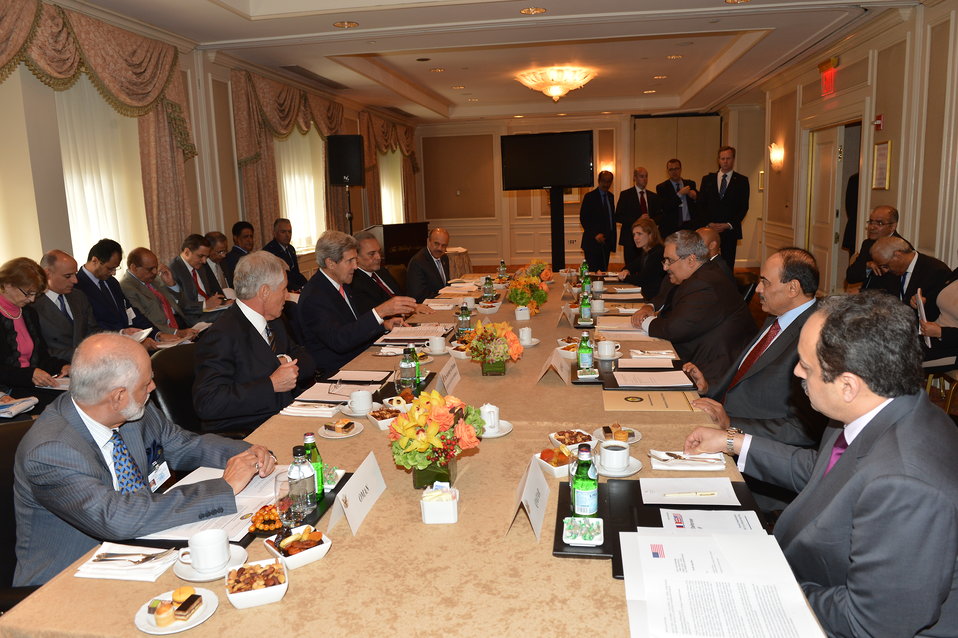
Secretary Kerry Participates in the Gulf Cooperation Council Strategic Cooperation Forum

U.S. Secretary of State John Kerry participates in the Gulf Cooperation Council Strategic Cooperation Forum in New York City on September 26, 2013.